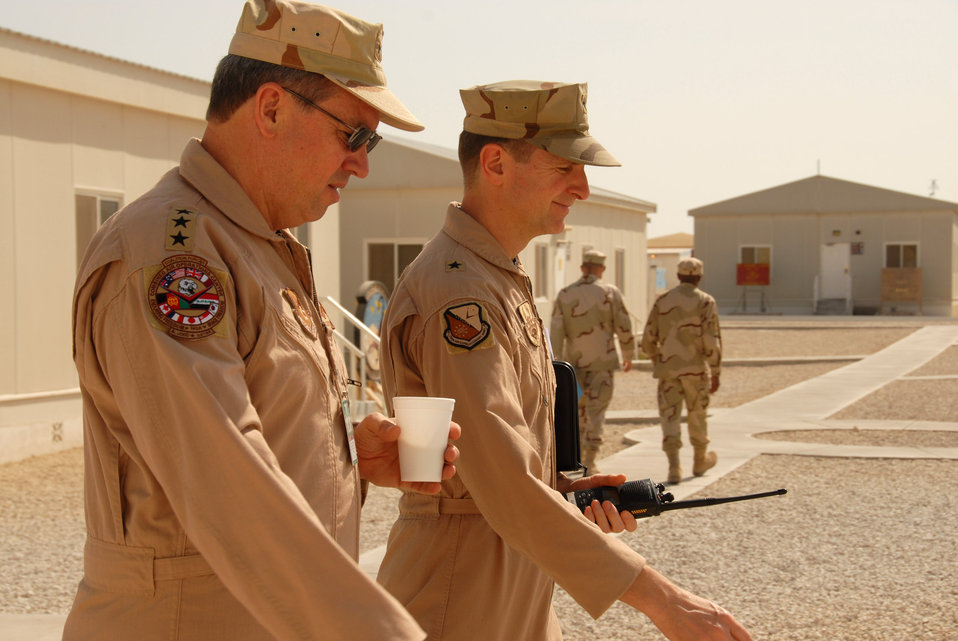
Top intel officer gets firsthand look at downrange operations

Lt. Gen. David A. Deptula (left) walks with Brig. Gen. Charles K. Shugg during his visit down range. The general discussed how a combined arms campaign with integrated airpower is the only way to build success in both theaters. General Deptula is the deputy chief of staff for intelligence, surveillance and reconnaissance. General Shugg is the 379th Air Expeditionary Wing commander.